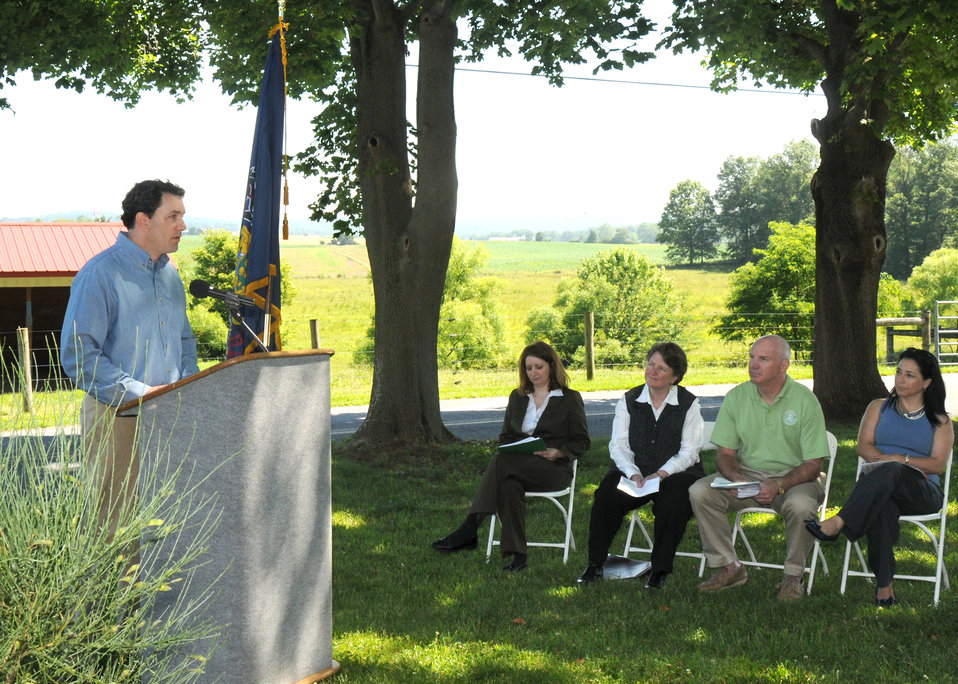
President, Tri-County Conewago Watershed Association and Director, Lower Susquehanna Initiative, Penn State University Matt Royer speaks about the cooperative efforts of local partners in the Chesapeake Watershed Project held at the Eby-Patterson farm in Hershey, PA, on Friday, June 18, 2010. (Seated to the left Natural Resources and Conservation Service State Conservationist Denise Coleman, Agriculture Deputy Secretary Kathleen Merrigan, U. S. Congressman (PA-17th District) Tim Holden, and Interior Department Deputy Assistant Secretary for Water and Science Deanna Archuleta) USDA photo 10di1409-41.